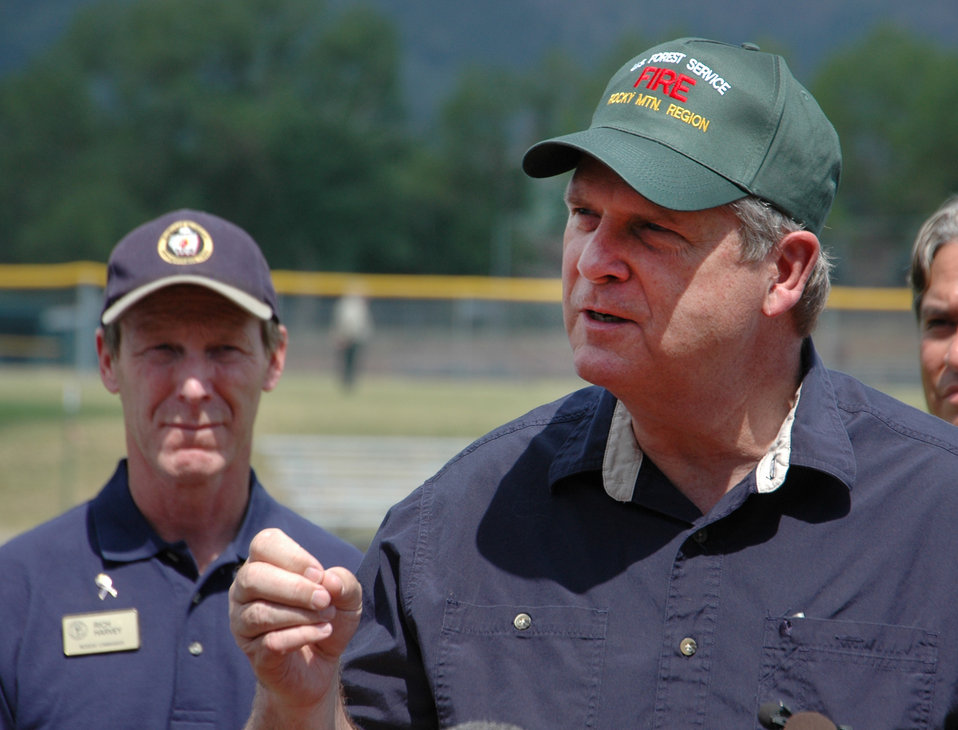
Agriculture Secretary Tom Vilsack answers questions during a press conference during his visit to Waldo Canyon Fire near Colorado Springs, CO on Tuesday, July 3, 2012.